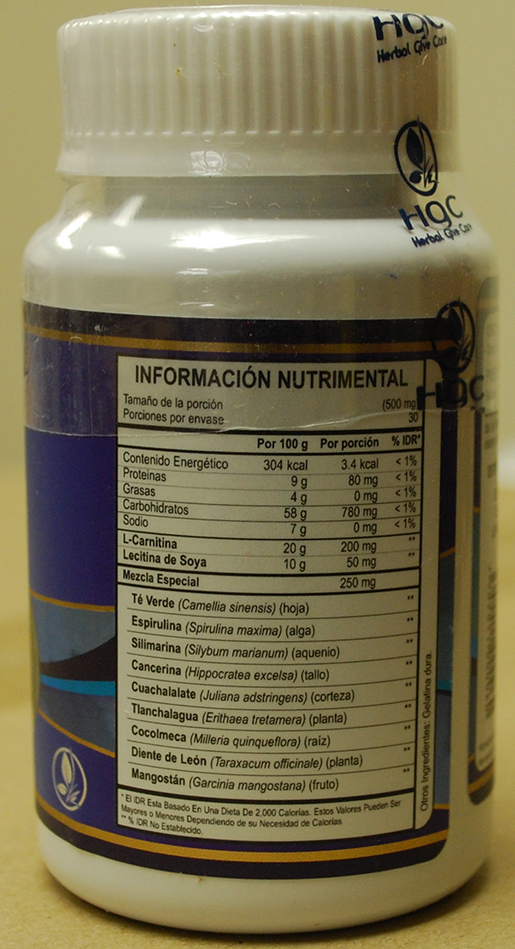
RECALLED – Dietary Supplement

July 19, 2013 – Product Recall – Herbal Give Care LLC Issues Voluntary Nationwide Recall of Esbelin Siloutte Te and Esbelin Siloutte Vitamin Supplement Due to Potential Health Risks.